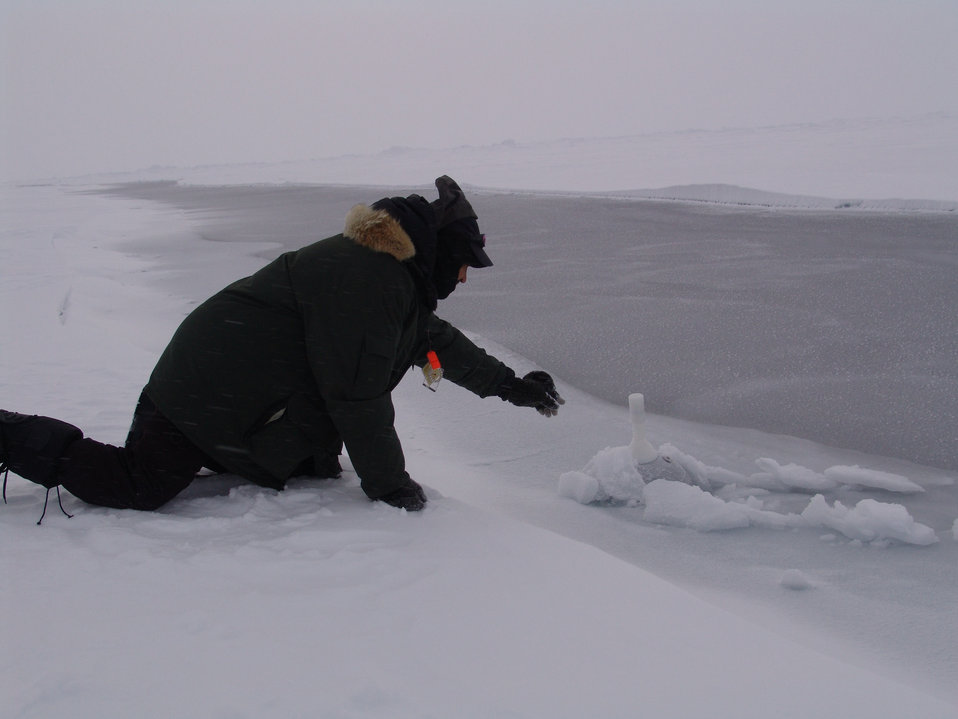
Dr. Pablo Clemente-Colon carefully retrieving an SVP-BT buoy in newly frozen ice in a lead. This requires extreme caution as the ice is very thin and there is 1500 meters of very cold water below the ice.